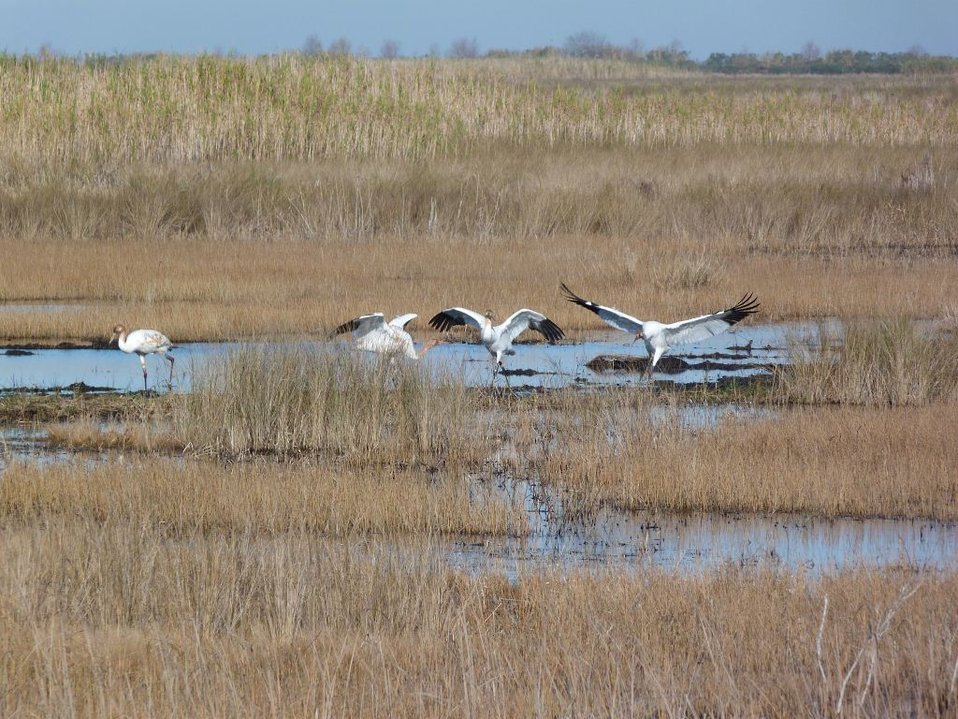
Newly Released Whooping Cranes

Four newly released birds exploring the marsh surrounding the release pen.